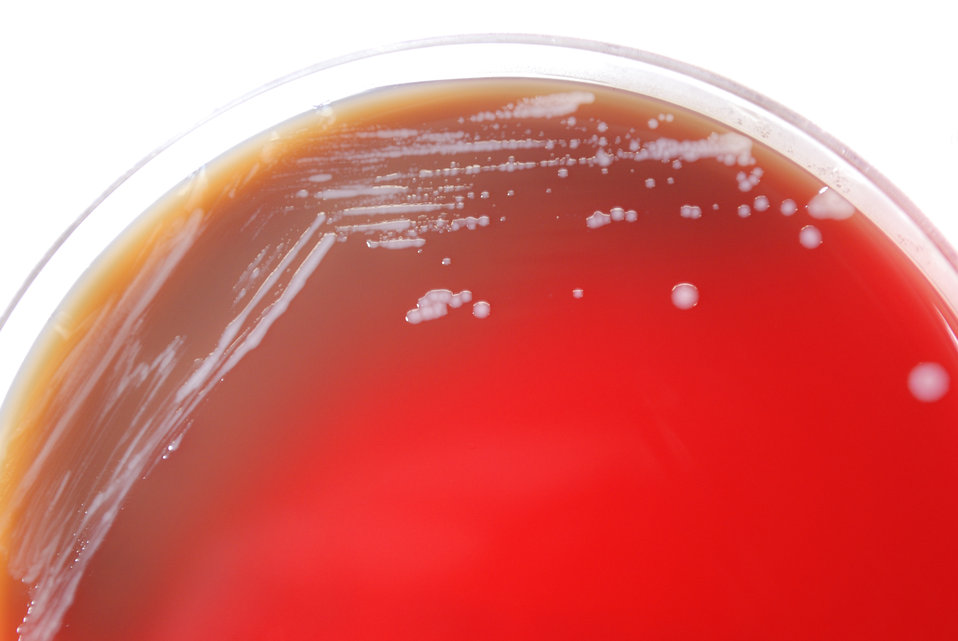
A closer view of PHIL 12269, this photograph depicts the colonial morphology displayed by Gram-negative Burkholderia mallei bacteria, which was grown on a medium of sheep's blood agar (SBA), for a 72 hour time period, at a temperature of 37�C. B. mallei is the bacterium responsible for causing the infectious disease known as glanders.